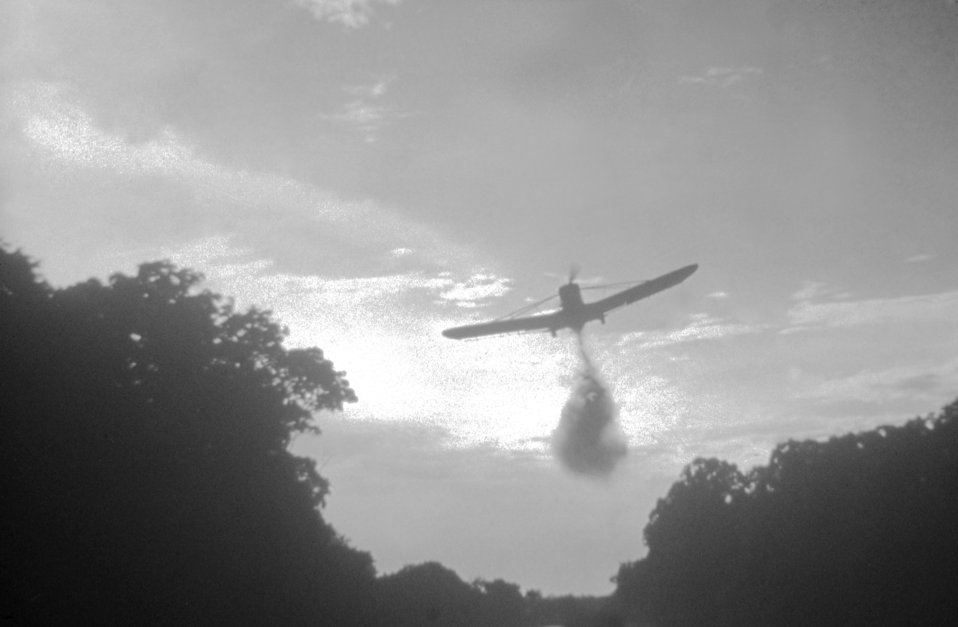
Photograph of an insecticide spray plane in flight.